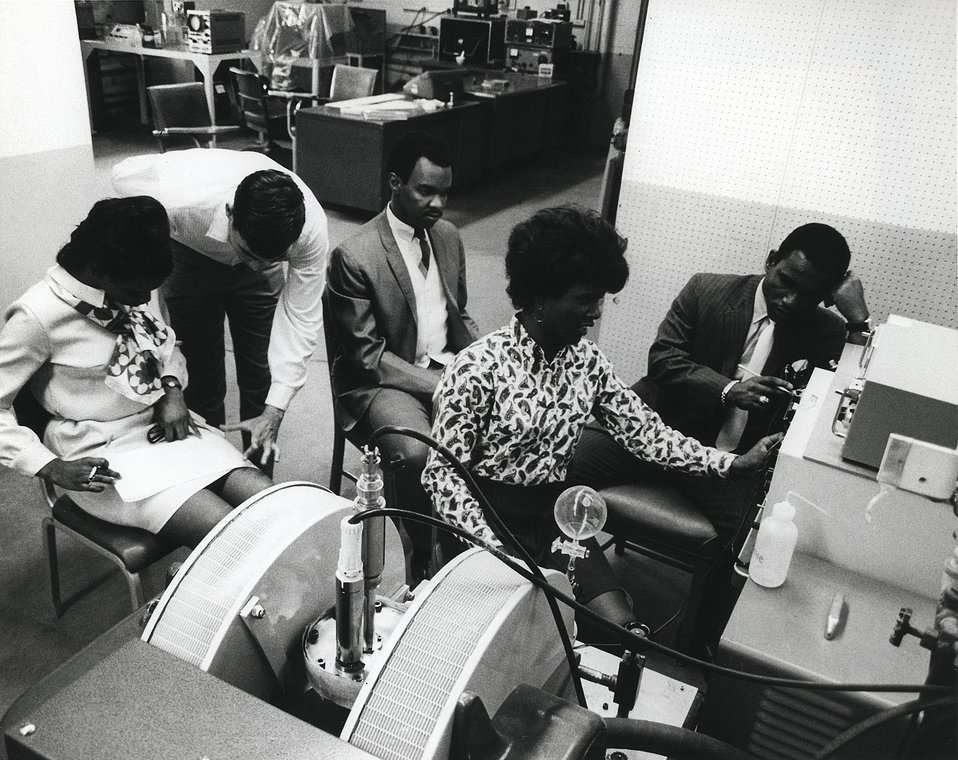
Students visit Argonne each year tpo pursue studies in major sciences.
c.1970